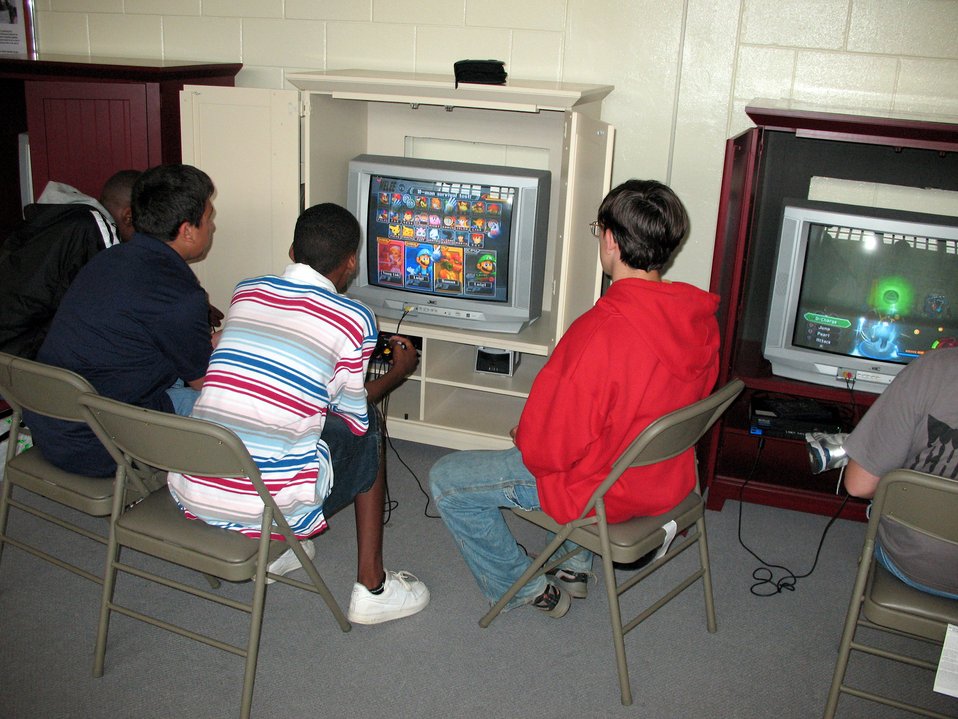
New center caters to Kadena youth

Teens play video games in the Cyber Cafe, a room inside the Nakayoshi Complex with video game consoles, pool, air hockey and other games April 6 at Kadena Air Base, Japan. The new Nakoyoshi Youth Complex opened for base teens and provides community youth services.